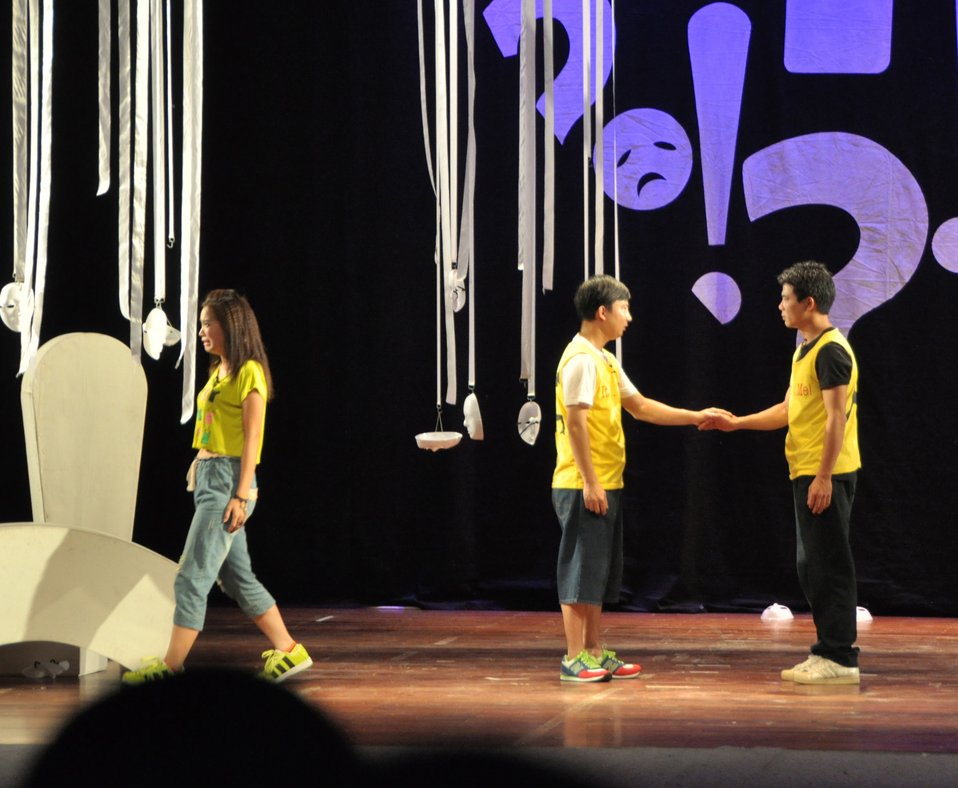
PEPFAR Musical Questions and Exclamations

Hanoi, May 17, 2013